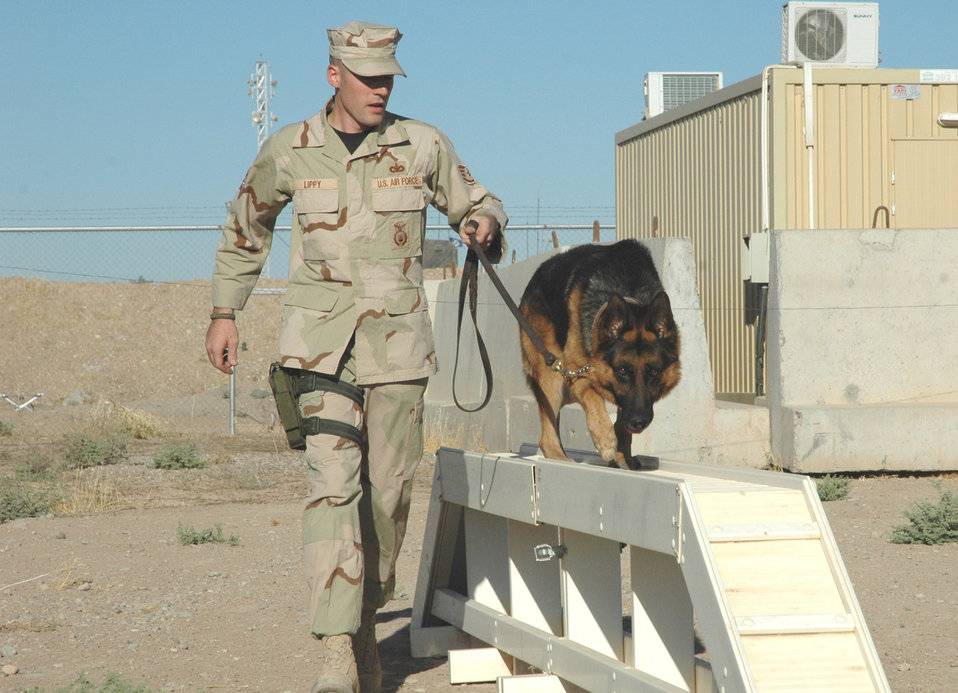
Air Force Birthday project

Staff Sgt. Keith Lippy and Beni are celebrating the Air Forces' 59th Birthday on patrol in Iraq. Benji and Sergeant Lippy, a military working dog handler, are assigned to the 506th Expeditionary Security Forces Squadron at Kirkuk Air Base, Iraq.